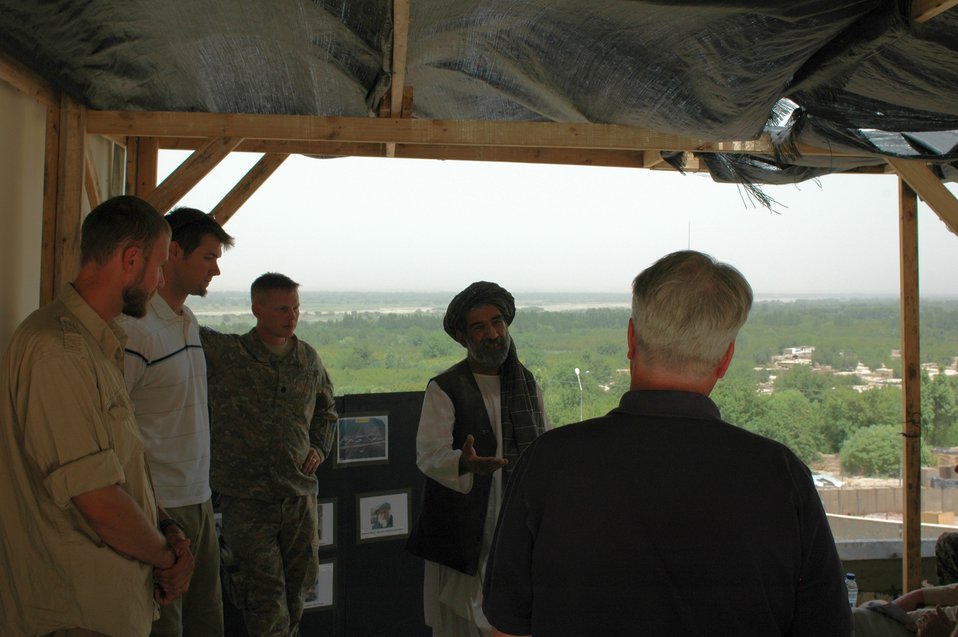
CODEL Berman